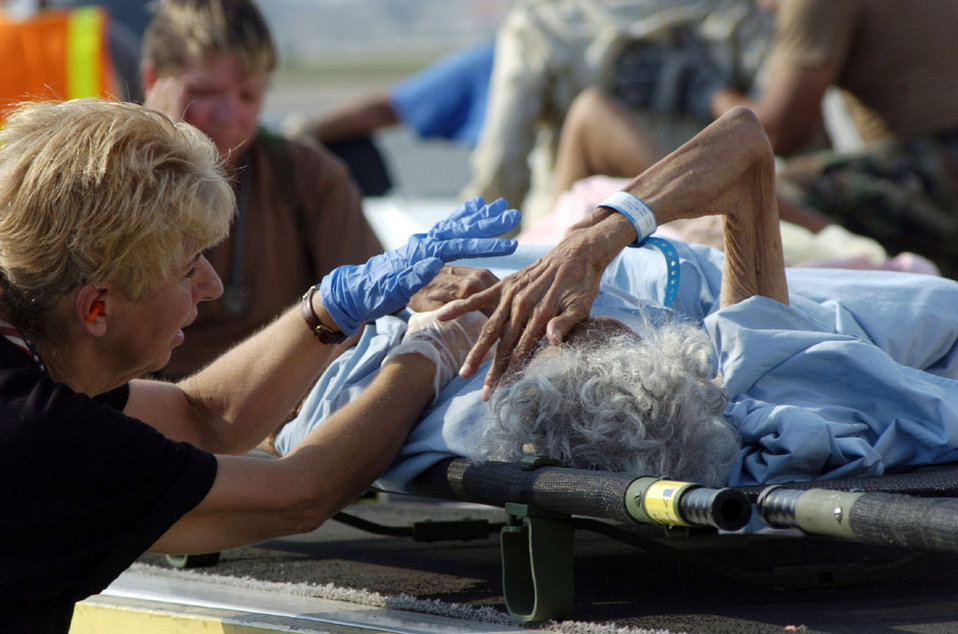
Air Force evacuates the sick and wounded

NEW ORLEANS -- An elderly patient is treated by medics after arriving here Sept. 2. Thousand of victims have been flown here since evacuations began Aug. 31.